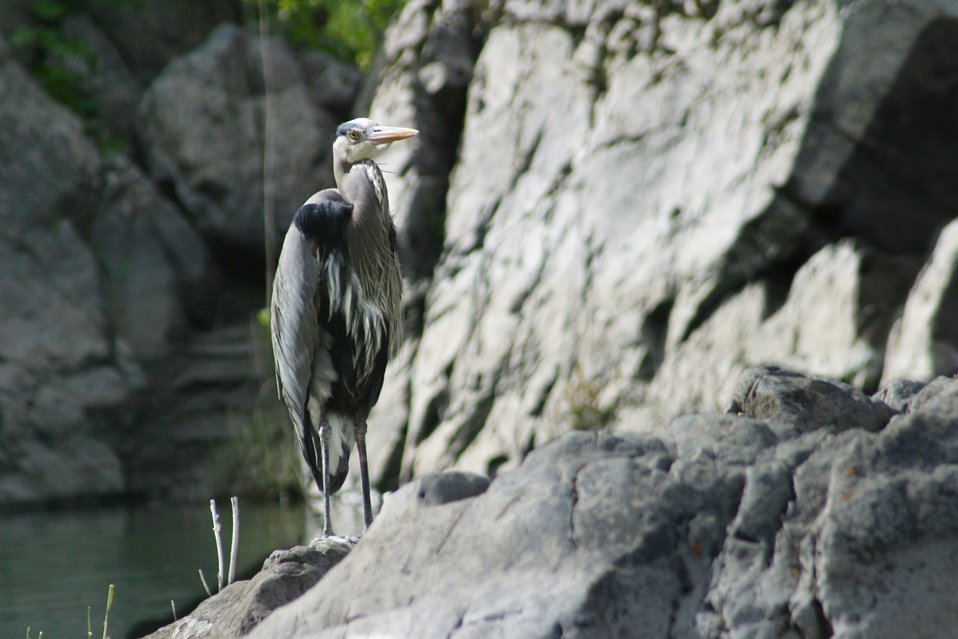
Great Blue Heron on the Wild section of the Rogue River from Grave Creek to Foster Bar. 3100 cfs at Grants Pass and 5300 at Agness.